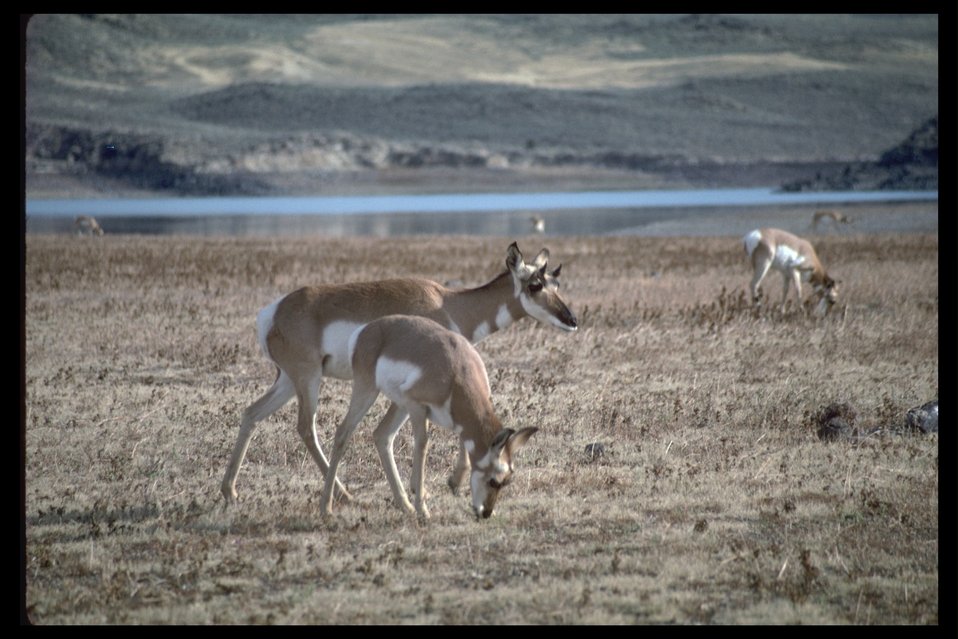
Large herd of Prong Horn Antelope at Warm Springs Reservoir.